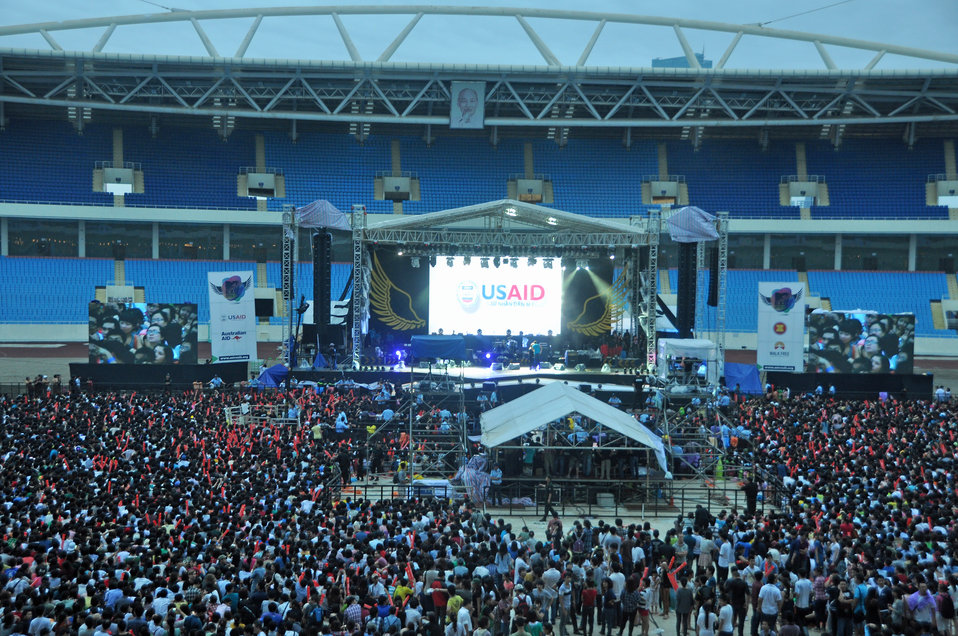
Huge crowd gathers ahead of concert against human trafficking and exploitation

USAID supports MTV EXIT concert against human trafficking and exploitation